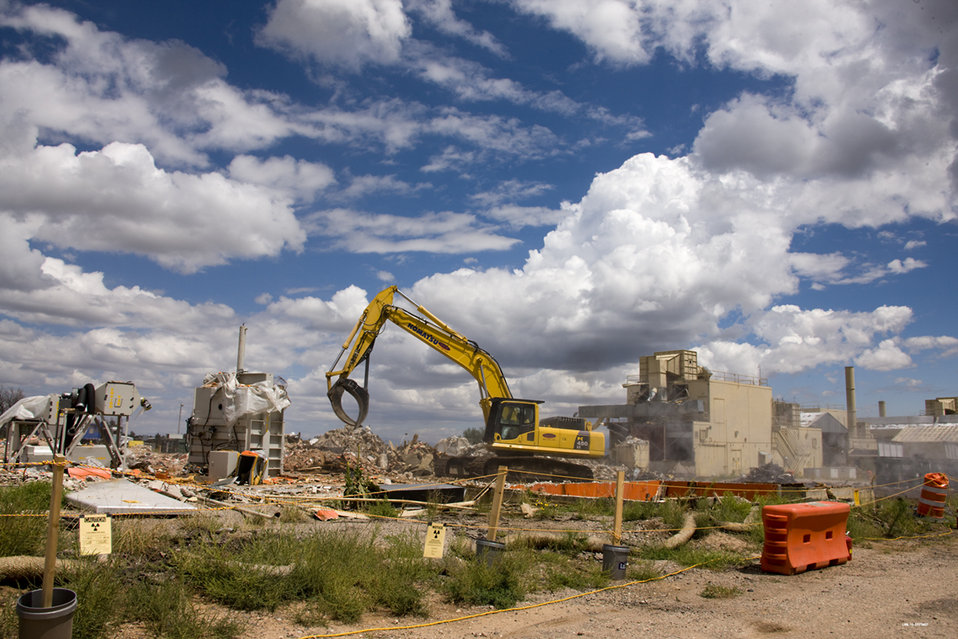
Los Alamos Demolition Work

Multiple Recovery Act projects are ahead of schedule at LANL, including the demolition of 24 buildings at Technical Area 21.